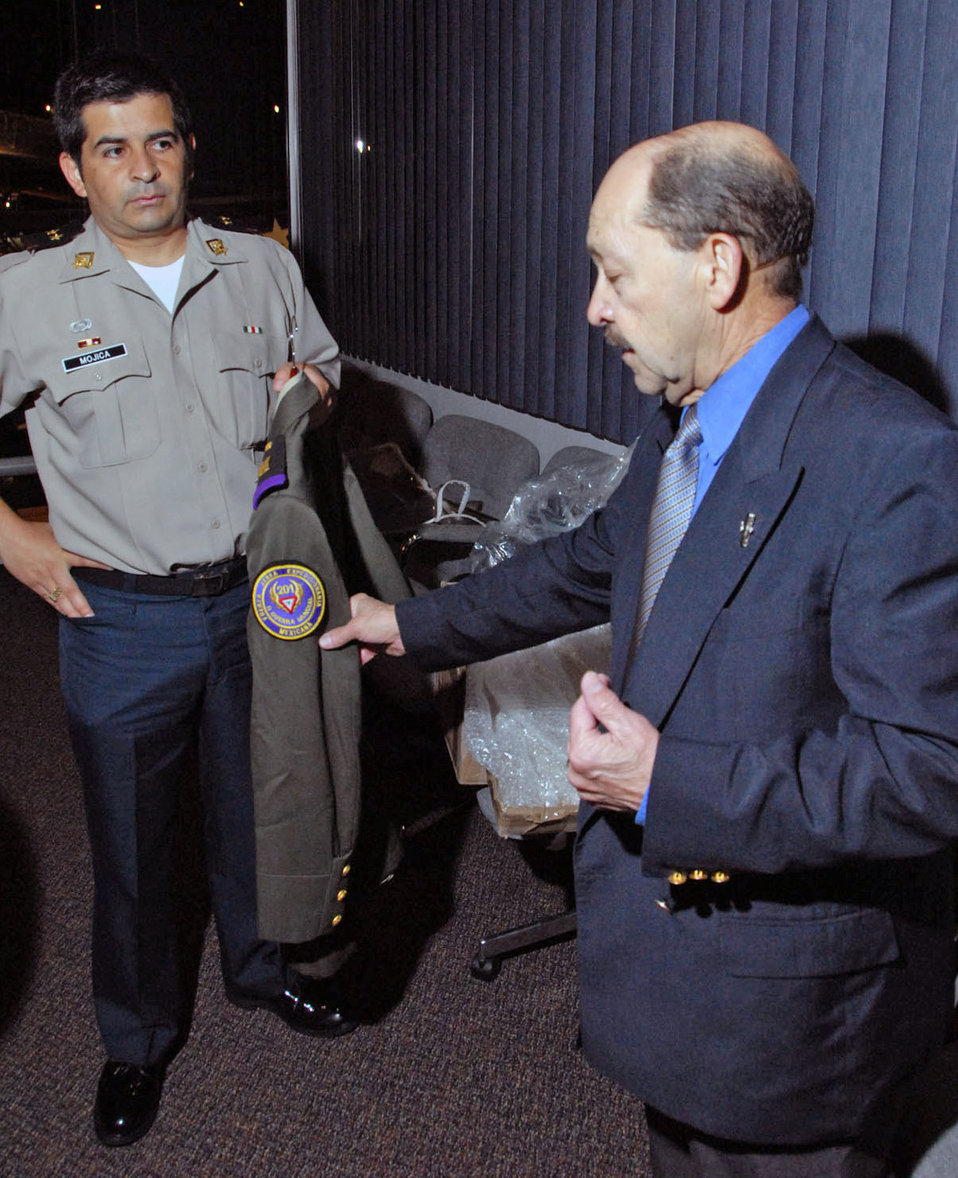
Museum receives artifact donation from Mexican air force

Retired U.S. Air Force Col. Rafael Ramos points to a patch on a Mexican air force uniform from World War II while Mexican air force Lt. Col. Daniel Mojica holds the uniform during a donation ceremony April 29 at the National Museum of the U.S. Air Force in Dayton, Ohio.